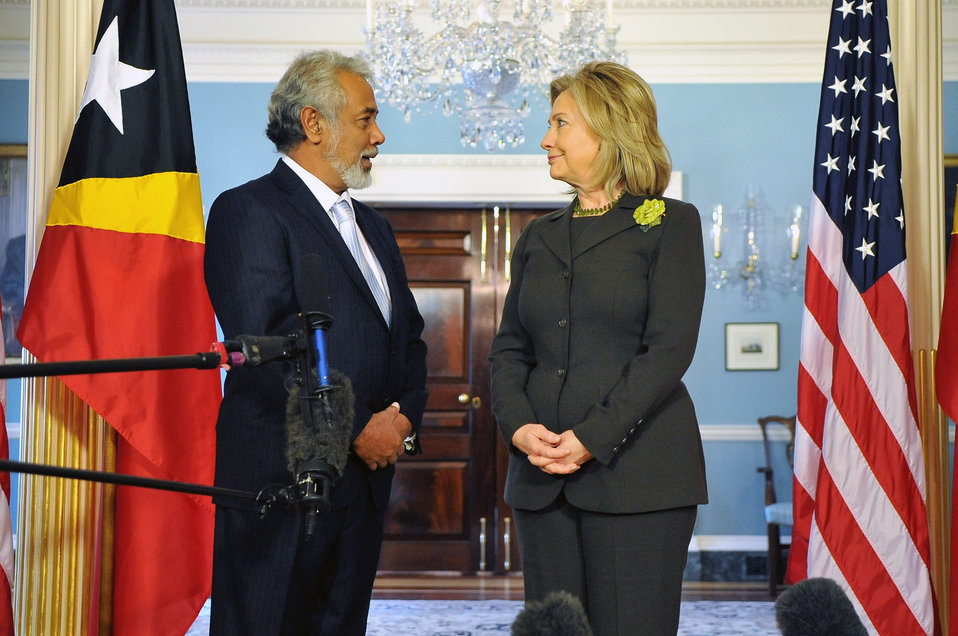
Secretary Clinton Holds a Bilateral Meeting With Timor-Leste Prime Minister Gusmao

U.S. Secretary of State Hillary Rodham Clinton holds a bilateral meeting with Timor-Leste Prime Minister and Defense and Security Minister Xanana Gusmao at the U.S. Department of State in Washington, D.C., on February 24, 2011.